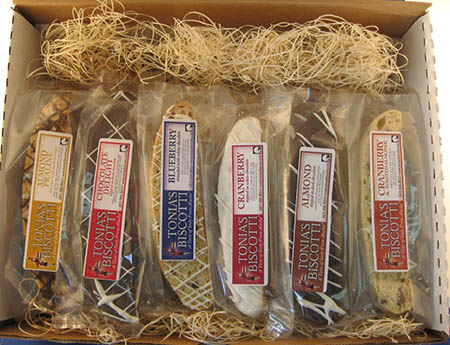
RECALLED – Lemon Biscotti Dipped in White Chocolate

January 3, 2014 – Product Recall – Tonia’s Biscotti II LLC Issues Allergy Alert on Undeclared Wheat, Milk, and Soy in Tonia’s Biscotti Sampler Bags, Lemon Biscotti Dipped in White Chocolate Bags, and Individually Wrapped Biscotti of All Flavors.